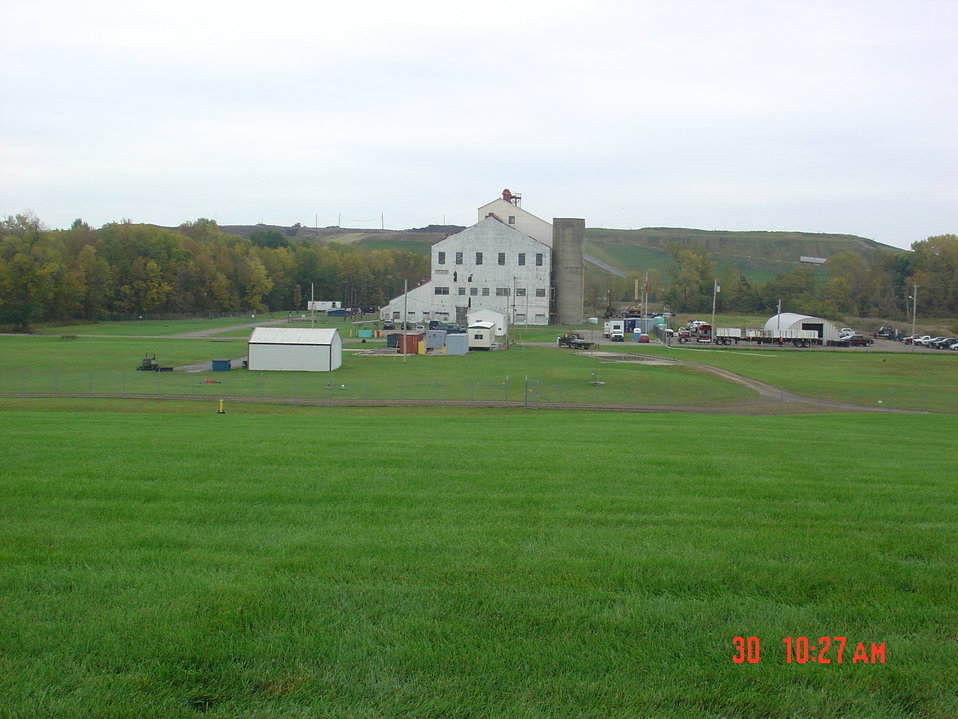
Building 401 site picture.

Activities from the Niagara Falls Storage Site, which is associated with the former Lake Ontario Ordnance Works. Formerly Utilized Sites Remedial Action Program (FUSRAP), a program initiated in 1974 to identify, investigate and clean up or control sites that were part of the Nation's early atomic energy and weapons program. Activities at the sites that are eligible for FUSRAP were conducted by Manhattan Engineer District (MED) or the Atomic Energy Commission (AEC), both predecessors of the Department of Energy (DOE). The U.S. Army Corps of Engineers was assigned management of FUSRAP by Congress in 1997.